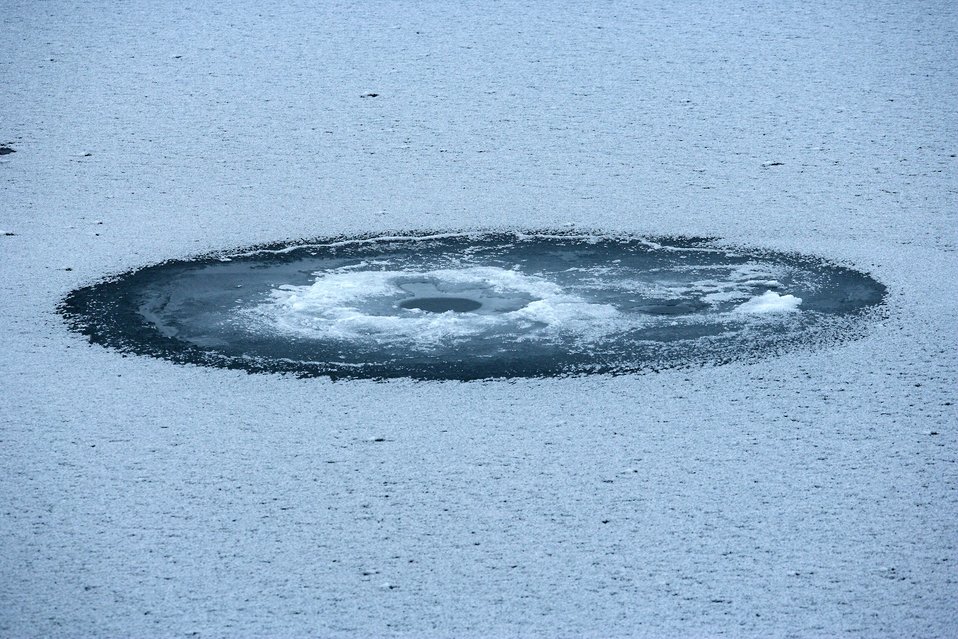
Seal breathing hole.